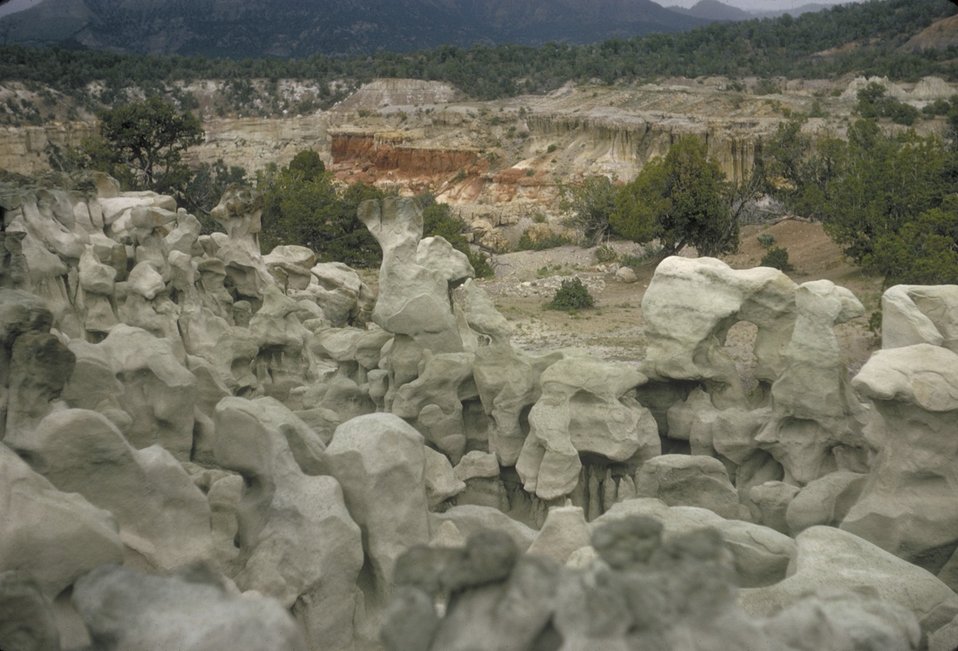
Goblin Recreation Site